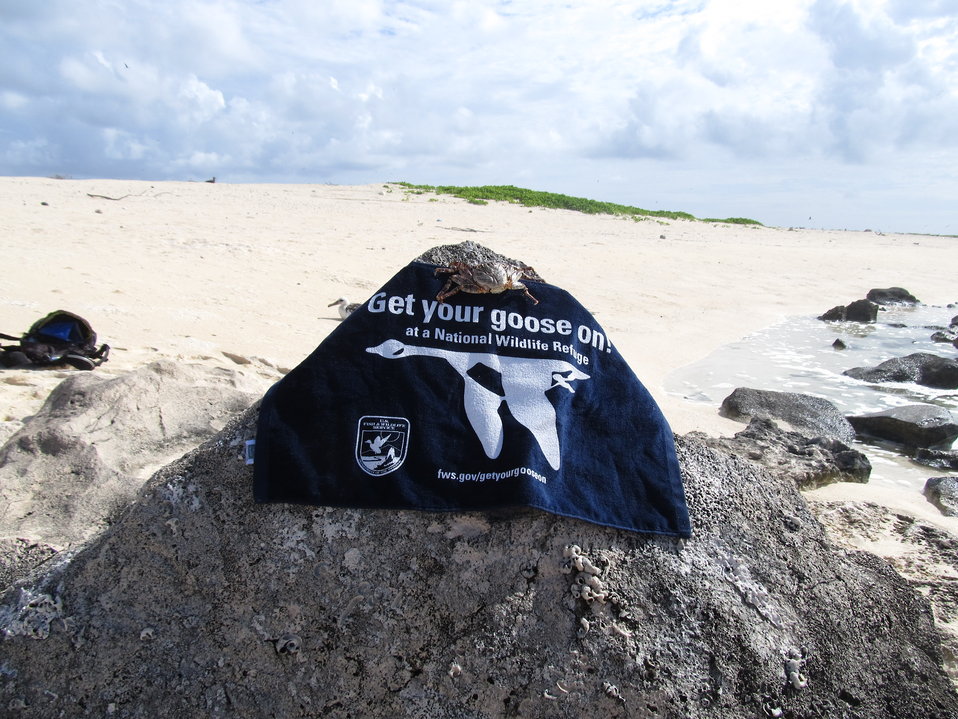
Get Your Goose On! - Laysan Style

Photo taken at Laysan Island in the Papahanaumokuakea Marine National Monument, Hawaiian Islands National Wildlife Refuge. Laysan is located approximately 800 miles northwest of Honolulu, Hawaii and is a remote field camp staffed year round for habitat restoration and population monitoring.